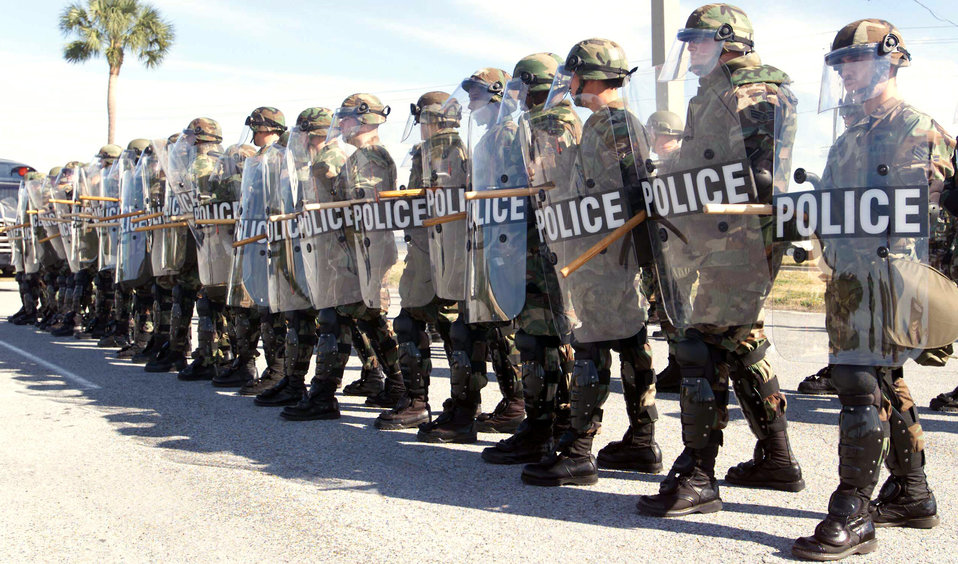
Riot control

MACDILL AIR FORCE BASE, Fla. -- Members of the 6th Security Forces Squadron here participate in riot control training.